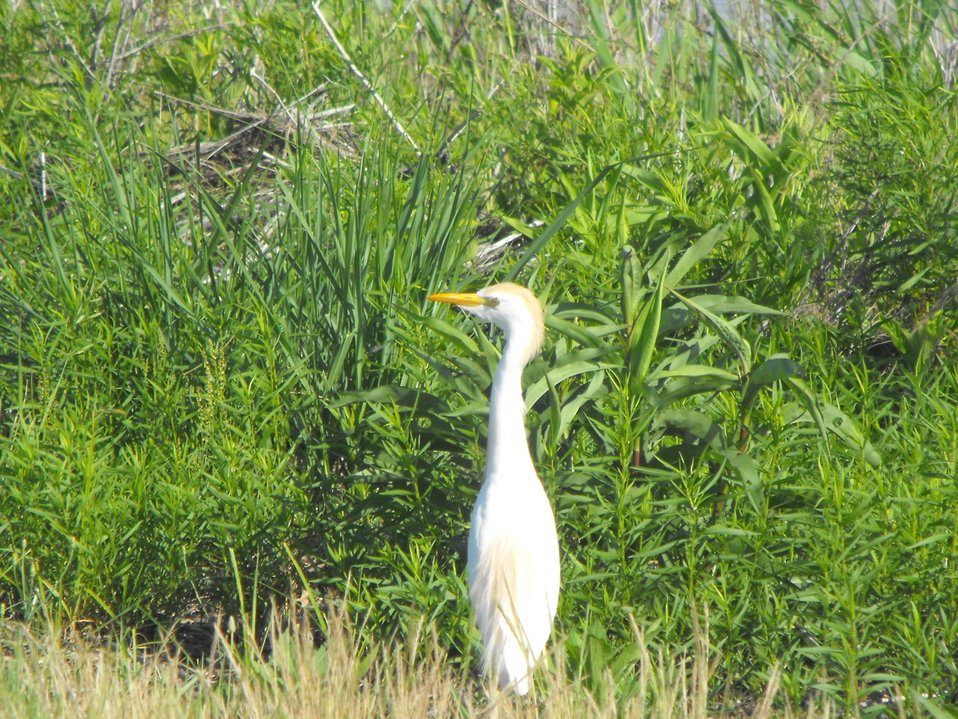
Cattle egret at Chincoteague National Wildlife Refuge / Assateague Island National Seashore.